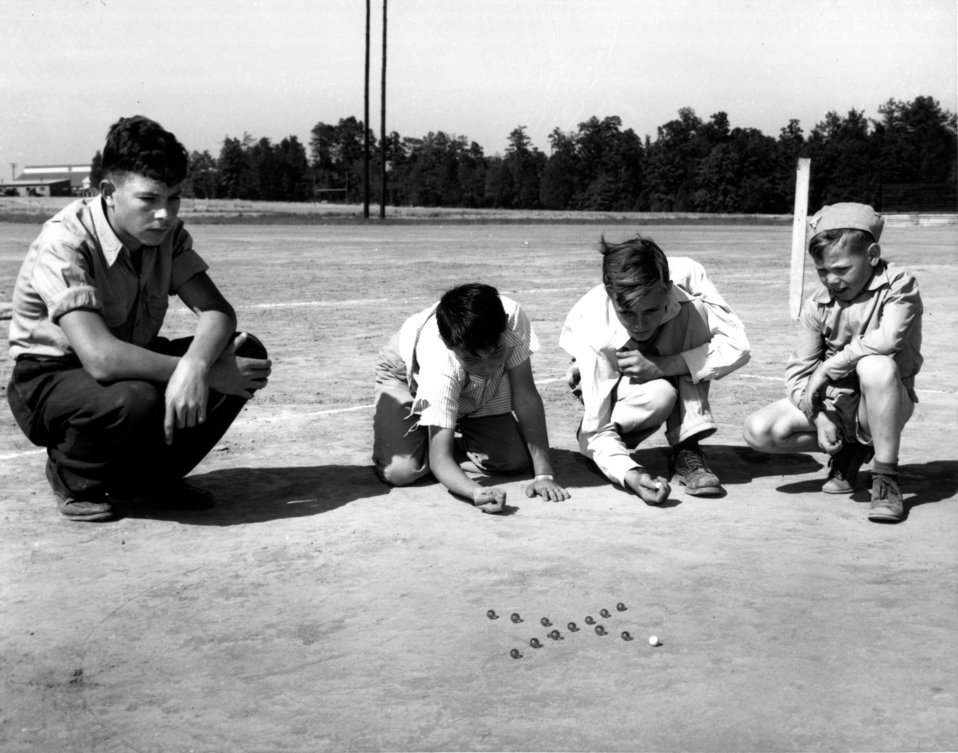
Recreation at Oak Ridge